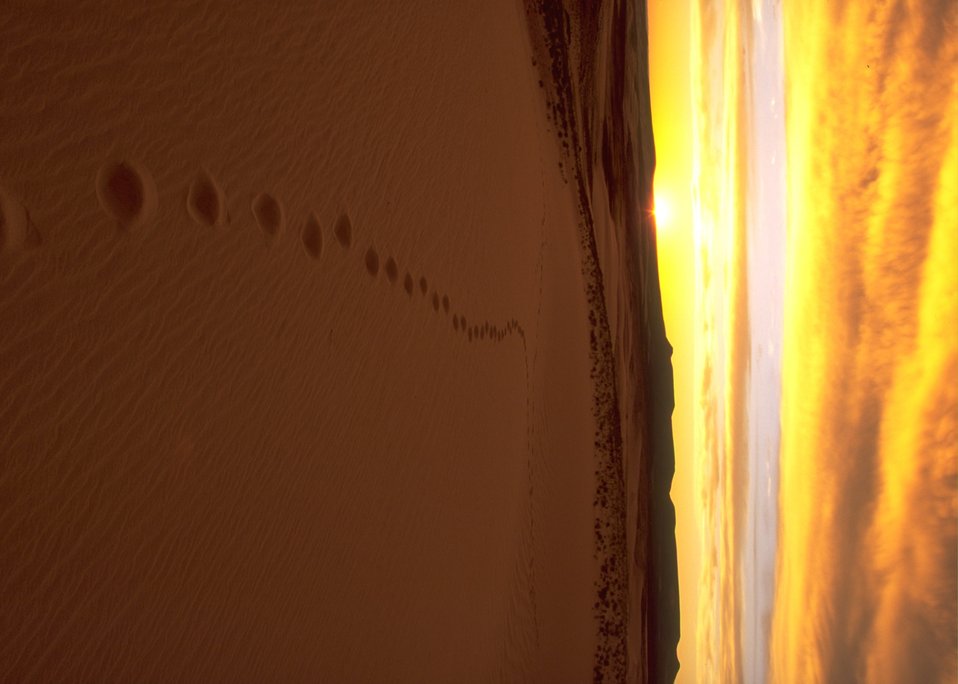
Sunset over OHV Sand Dunes Area, Rock Springs Field Office.